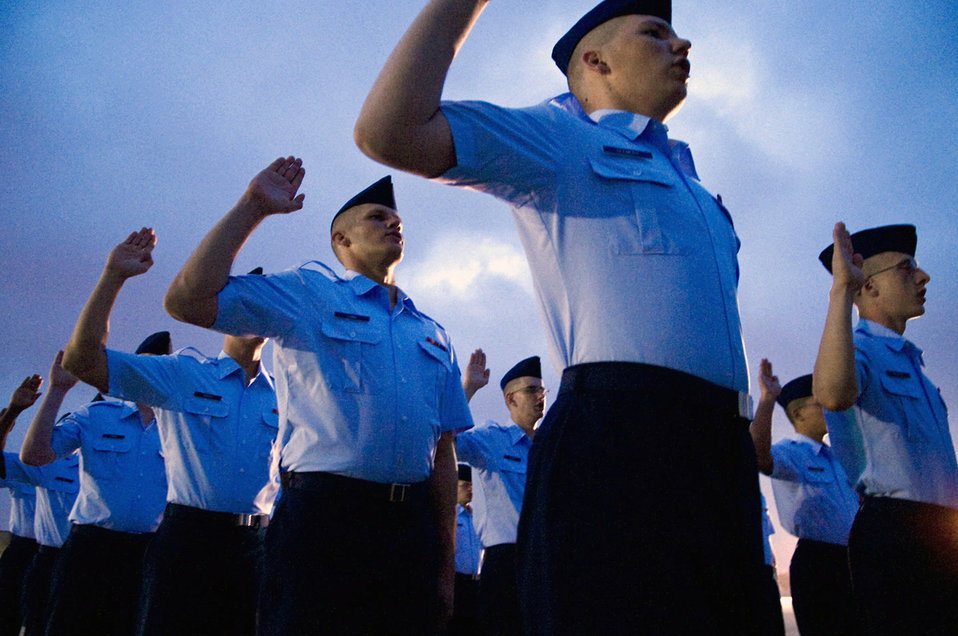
Graduation day

A group of 324th Training Squadron basic trainees practice swearing in to prepare for their Basic Military Training graduation May 1 at Lackland Air Force Base, Texas.